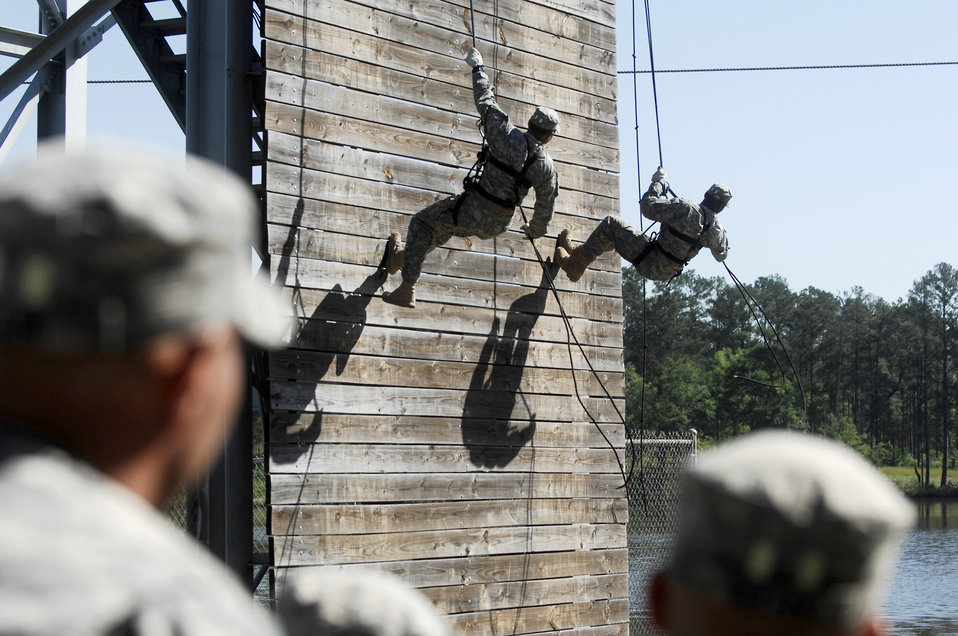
A1C Garner

Two prior Ranger graduates from the Ranger Training Brigade demonstrate rappelling during a demonstration preceding the official graduation ceremony April 29, 2011, at Fort Benning, Ga. The audience also observed demolitions and hand-to-hand combat demonstrations as a way to understand what the servicemembers went through during the 61-day Ranger training course. Airman Garner is assigned to the 823rd Base Defense Squadron.